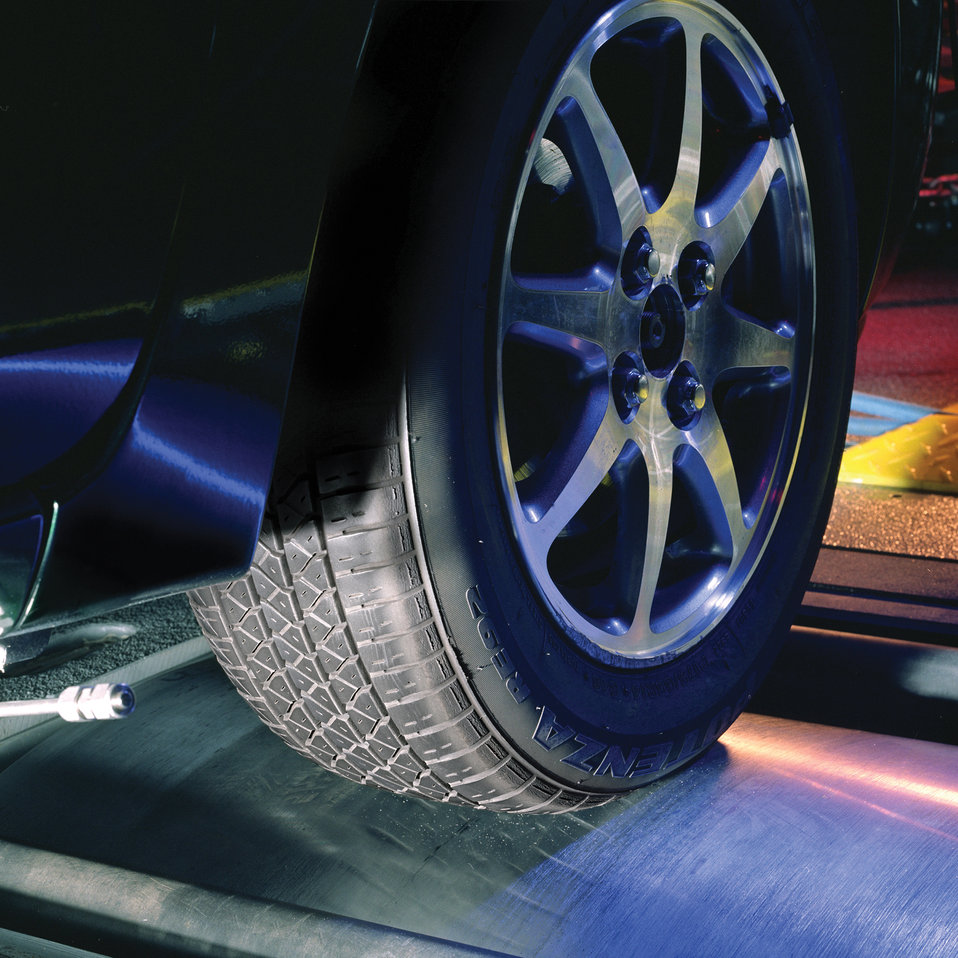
At Argonne National Laboratory, a vehicle's wheels spin on the Dynamometer, a kind of treadmill for cars, that lets engineers run road and emissions tests on cars in a controlled way.